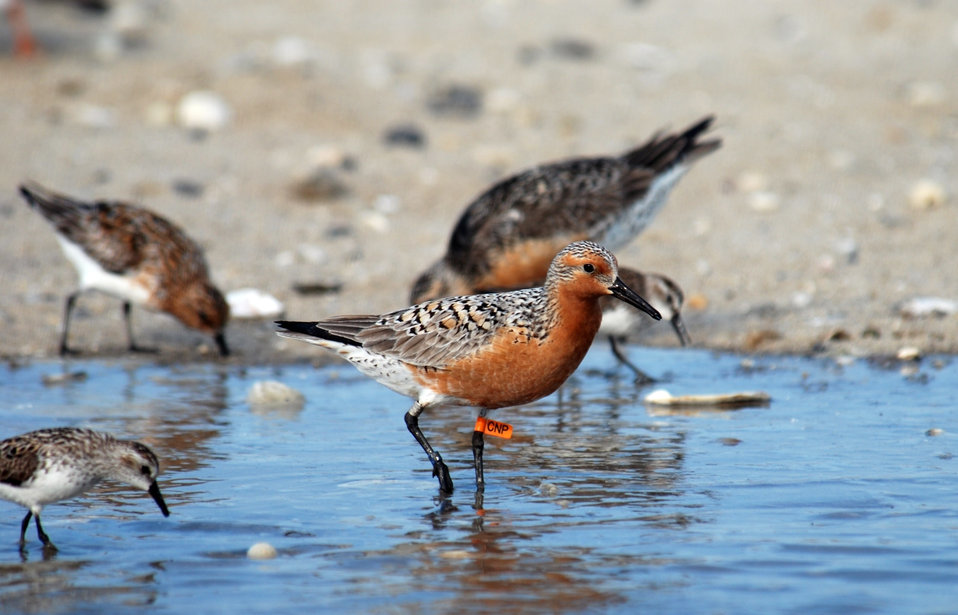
Tagged Red Knot

Mispillion Harbor, Delaware.